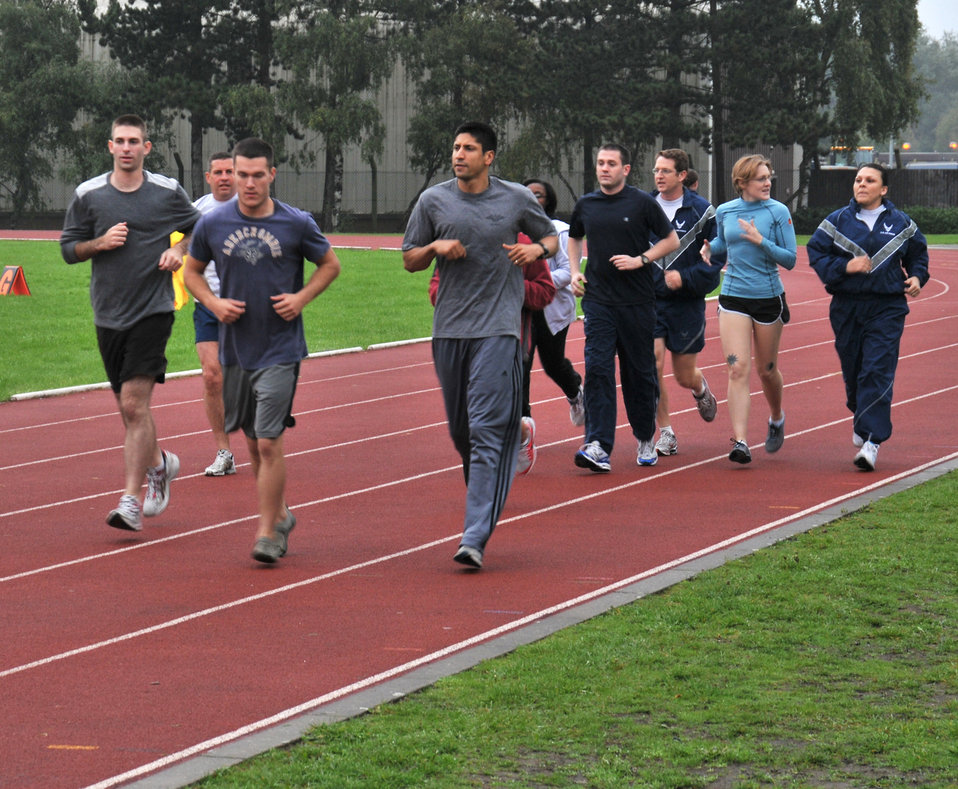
PTP program

Staff Sgt. Eduardo DeSouza (center in gray T-shirt and long pants), leads a warm-up during the PT Run Class Sept. 27, 2010 at the RAF Lakenheath running track. The class is held Monday through Thursday and is designed to help individuals with the 1.5-mile run portion of the Air Force PT test. Sergeant Desouza is an independent duty medical technician with the 48th Medical Operations Squadron.